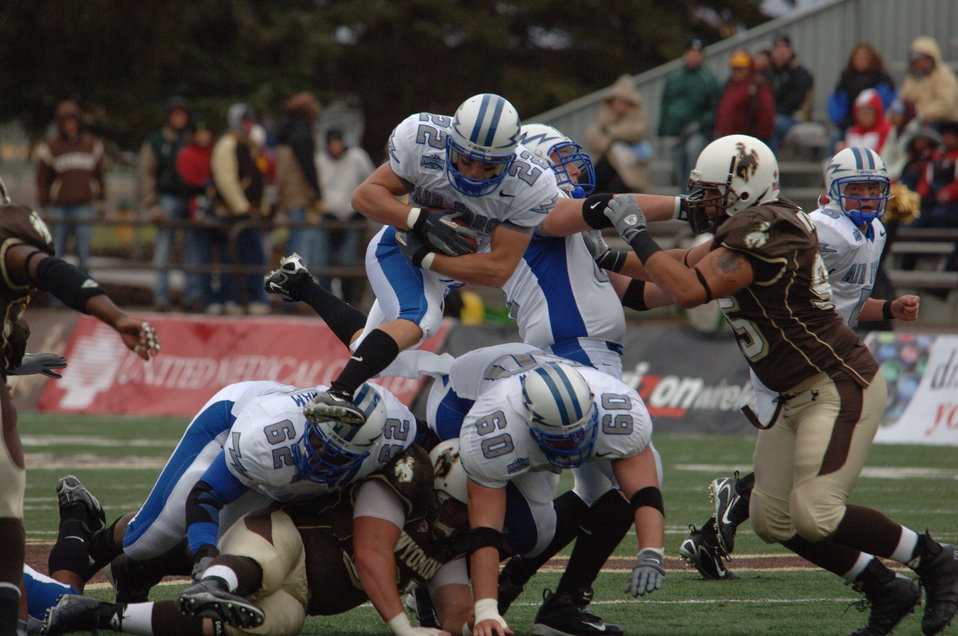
Flying Falcon

Falcon halfback Beau Suder goes airborne over the blocks of right guard Curtis Grantham, center Stuart Perlow and left guard Tyle Dohallow in the U.S. Air Force Academy’s 31-24 win over the University of Wyoming in Laramie, Wyo., on Sept. 23. The Falcons had 367 total yards in their first Mountain West Conference game of the season. Suder had two rushes for 9 yards and a 20-yard touchdown catch. Air Force’s record is now 1-1.